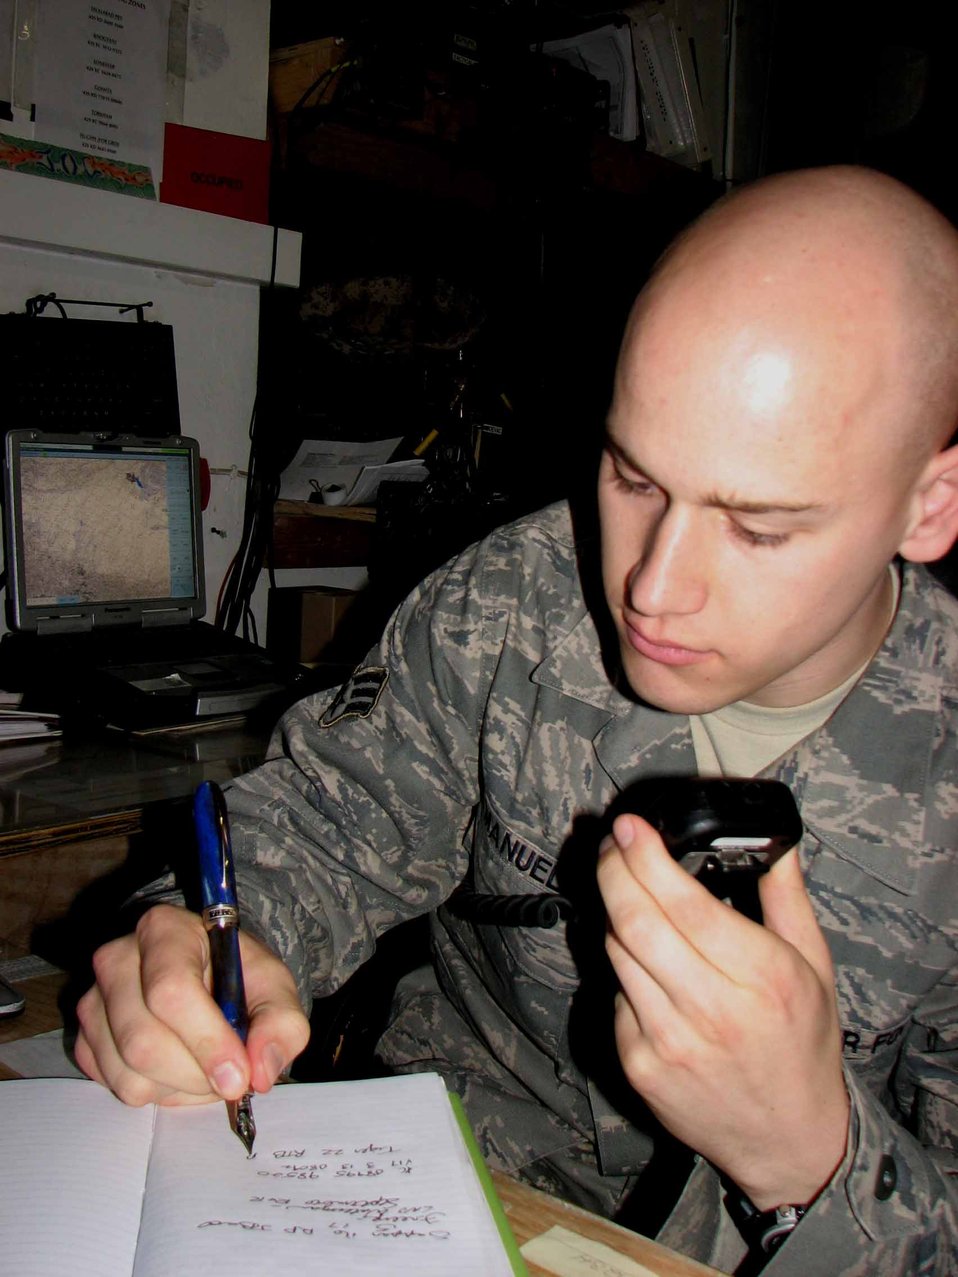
Answering the call

Senior Airman Blake Manuel, a radio telephone operator for the Nangarhar Provincial Reconstruction Team in Jalalabad, Afghanistan, operates a radio in the Tactical Operations Center at Bagram Airfield. Airman Manuel is deployed from Goodfellow Air Force Base, Texas.